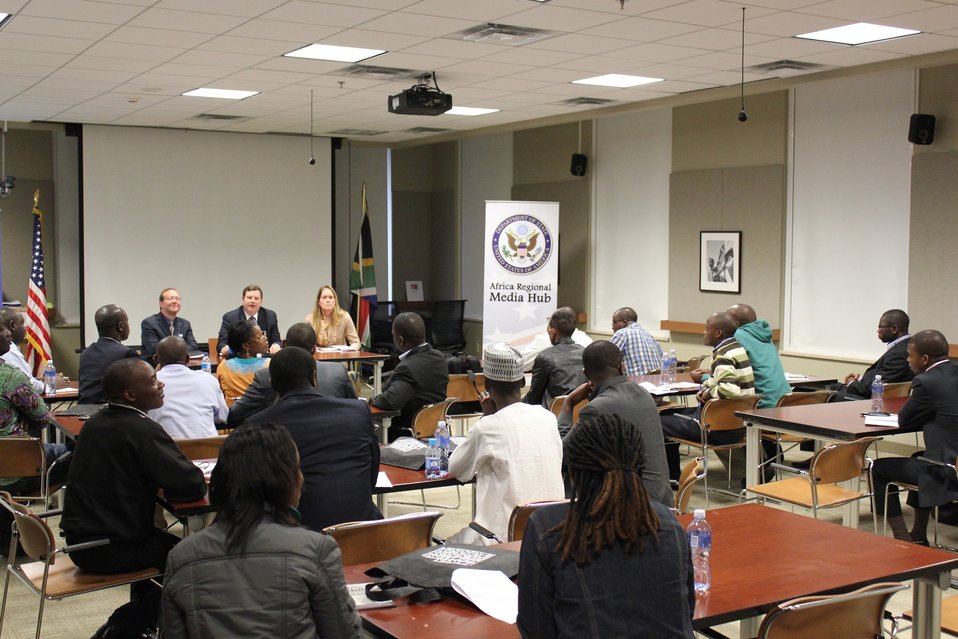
Assistant Secretary Hammer Participates in a Panel

Assistant Secretary of State for Public Affairs Mike Hammer participates in a panel with journalists at the launch of the new location of the Africa Regional Media Hub in Johannesburg, South Africa, November 1, 2012.